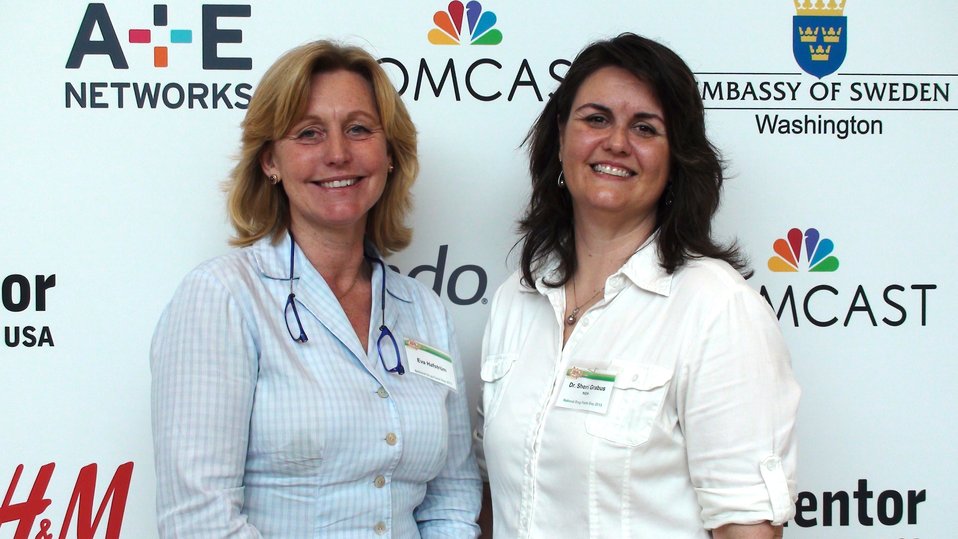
NIDA and Mentor during NDFW 2013

Washington, D.C., NIDA representive Dr. Sheri Grabus and the wife of Swedish Ambassador to the U.S., Mrs. Eva Halfstrom, during Mentor's Drug Facts Day at the House of Sweden, Jan. 30, 2013.